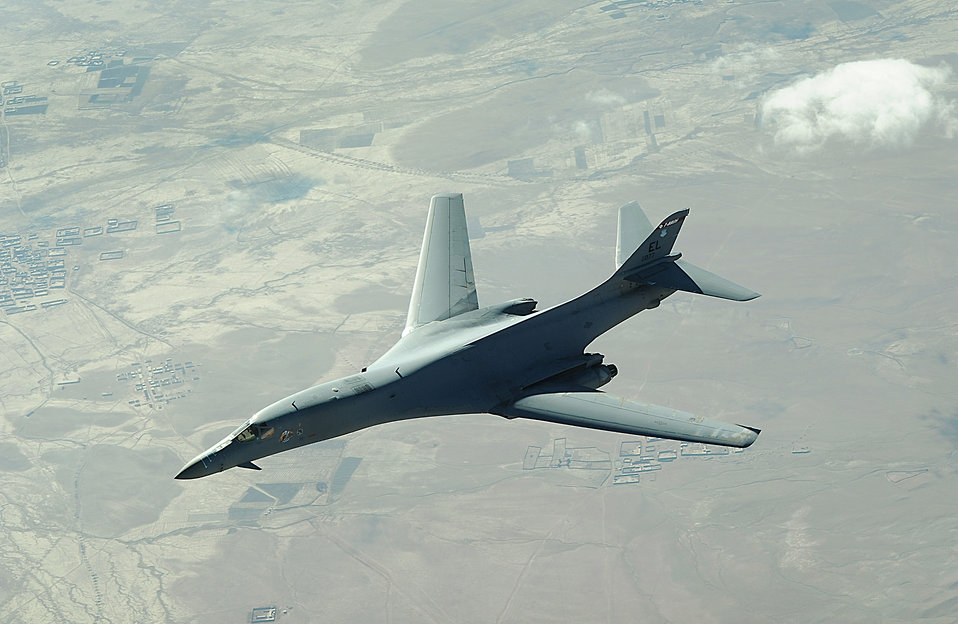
Jan. 11 airpower summary: B-1Bs hit anti-Afghan units

A B-1B Lancer flies a combat patrol mission over Afghanistan recently. B-1Bs fly close-air-support missions for both Operation Enduring Freedom and Operation Iraqi Freedom. The B-1B is assigned to the 34th Expeditionary Squadron.